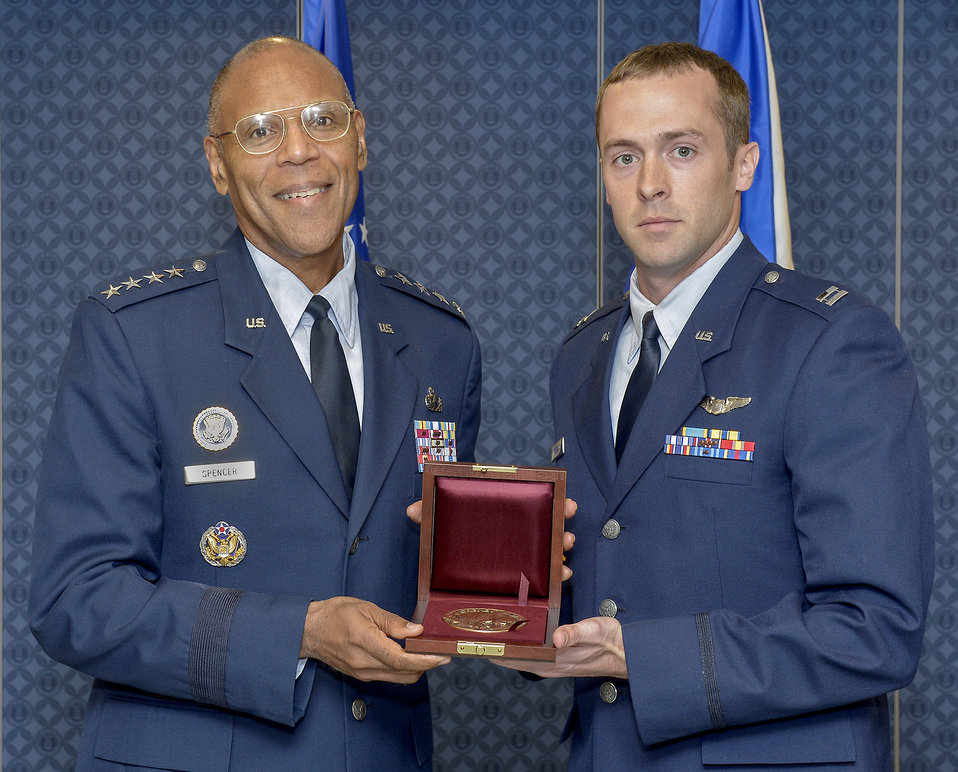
Cheney Award 2011

Air Force Vice Chief of Staff Gen. Larry Spencer presents the 2011 Cheney Award to Capt. Kenneth Green during a ceremony at the Pentagon on Nov. 1, 2012. Established in 1927, the Cheney Award is awarded to Airmen for an act of valor, extreme fortitude or self-sacrifice in a humanitarian interest, performed with an aircraft.